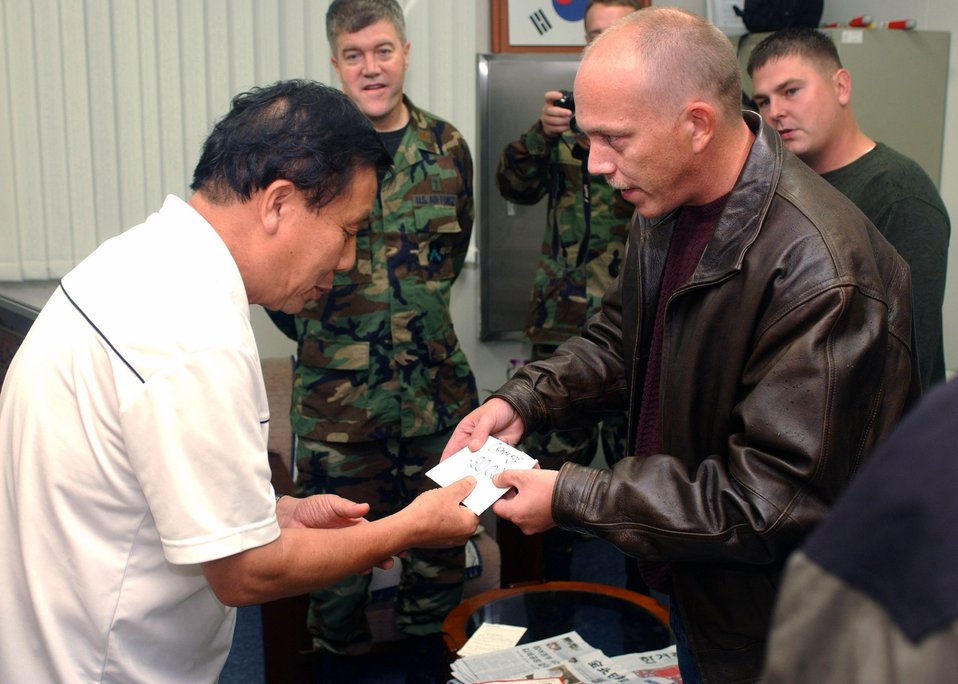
Good neighbors

Master Sgt. William Highlander presents 450,000 Won (approximately $500) to David Kim at the Gunsan Orphanage Sept. 5 at Gunsan City, South Korea. Sergeant Highlander and 12 other Airmen from the 8th Logistics Readiness Squadron volunteered at the Kunsan Air Base Commissary in South Korea to raise money for the children at the Gunsan Orphanage as part of a Good Neighbor Program initiative. Sergeant Highlander is the 8th Logistics Readiness Squadron Distribution NCO in charge.